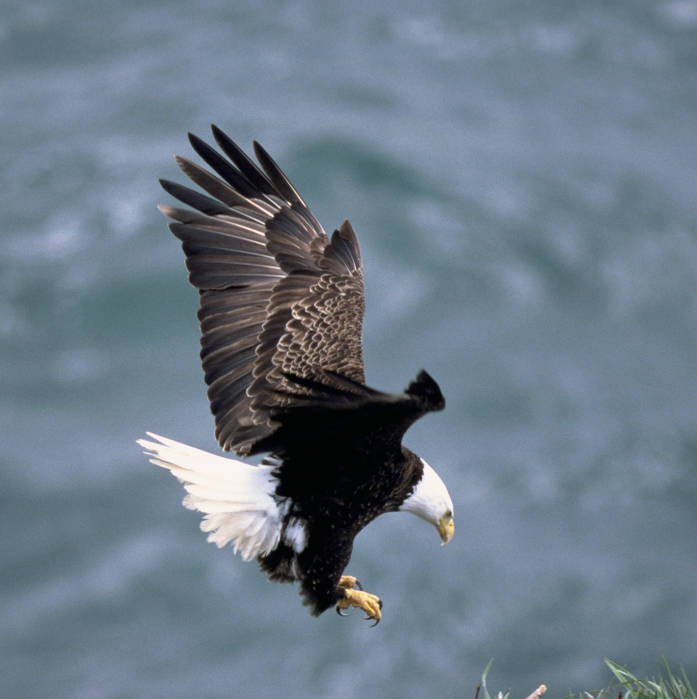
bald eagle landing

Kodiak National Wildlife Refuge